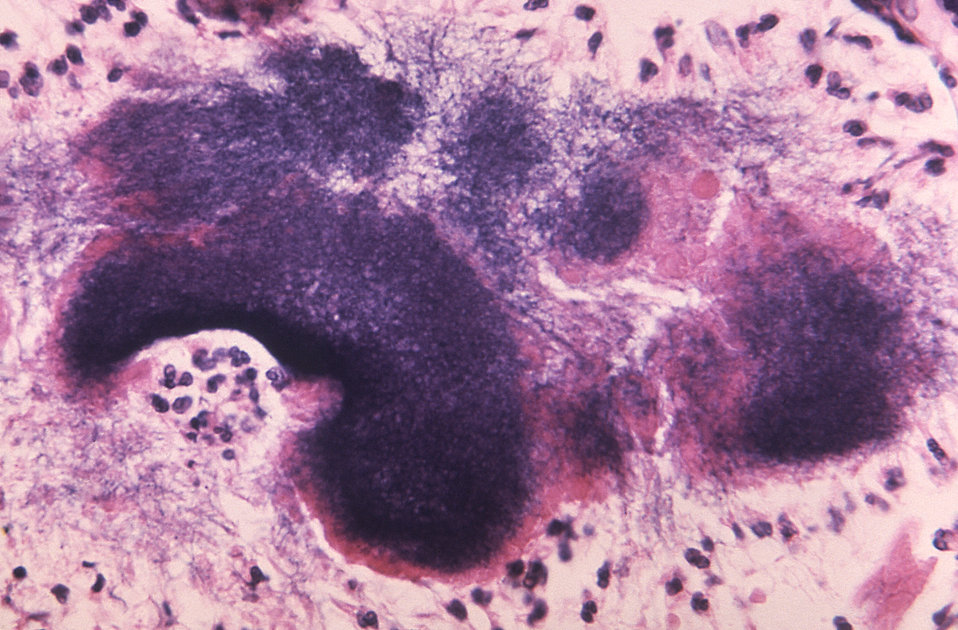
Magnified 600X, this Gram-stained photomicrograph revealed histopathologic cytoarchitectural changes brought about due to the Gram-positive Nocardia sp. bacterium.